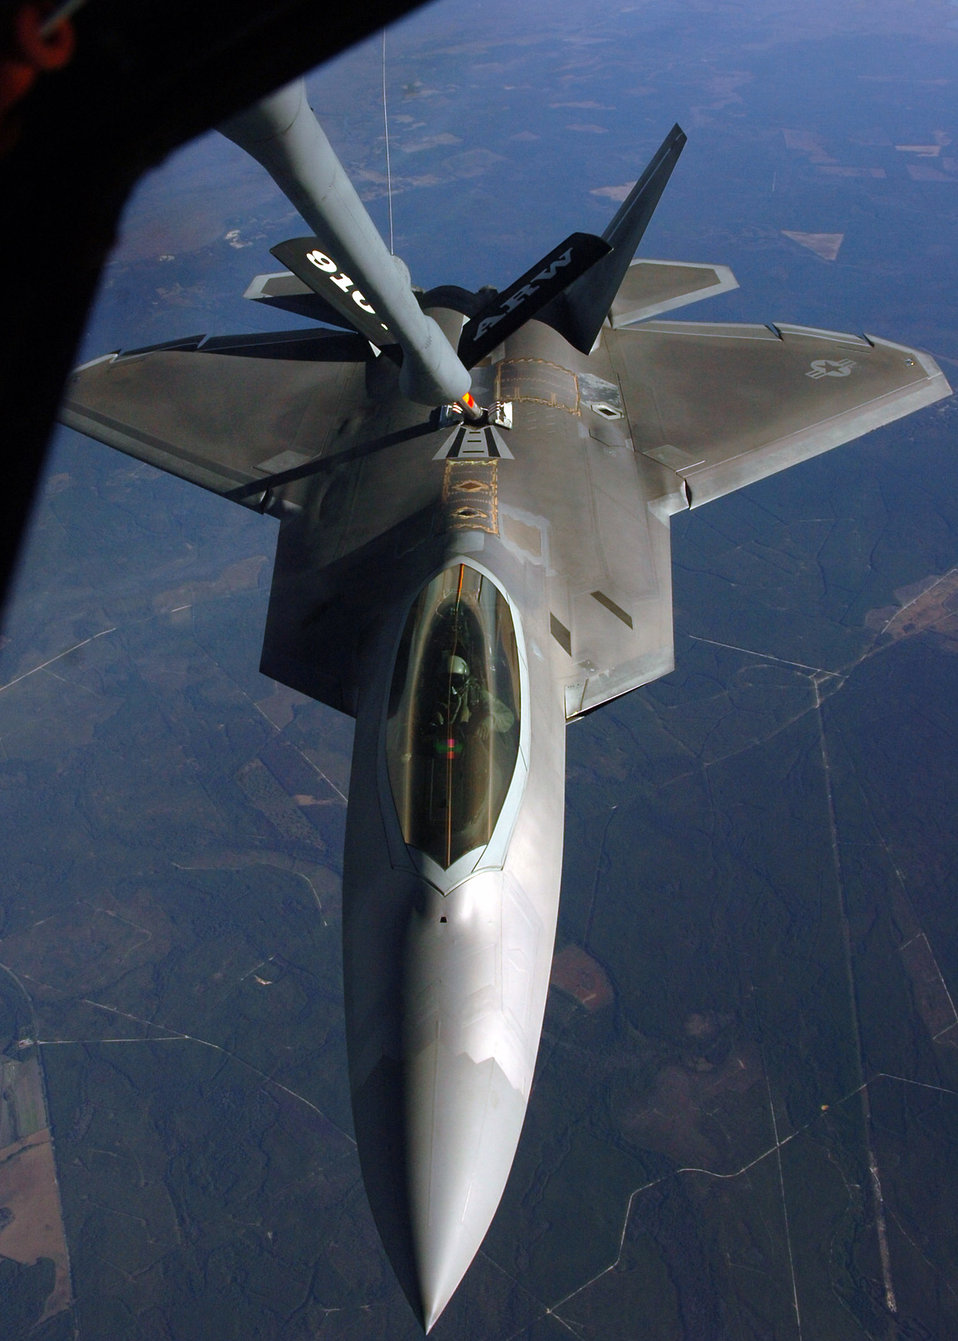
Feeding the Raptor

An F-22 Raptor receives fuel from a KC-135 Stratotanker during an air-to-air refueling training mission Dec. 4 over Eglin Air Force Base, Fla. The F-22 is from the 43rd Fighter Squadron at Tyndall AFB, Fla. The KC-135 is from the 916th Air Refueling Wing, an Air Force Reserve wing located at Seymour Johnson AFB, N.C.